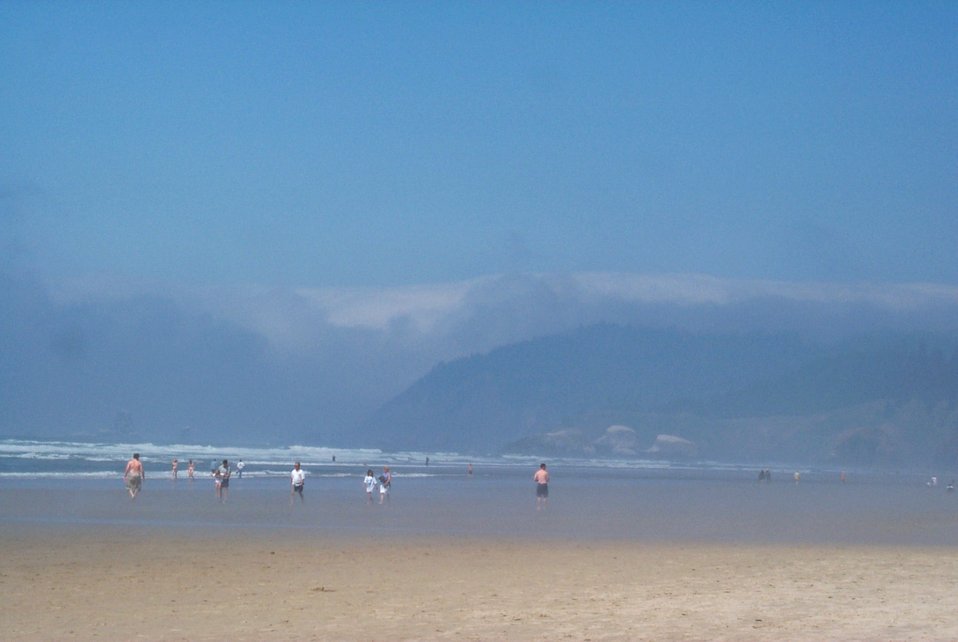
Cannon Beach looking north towards Tillamook Head.